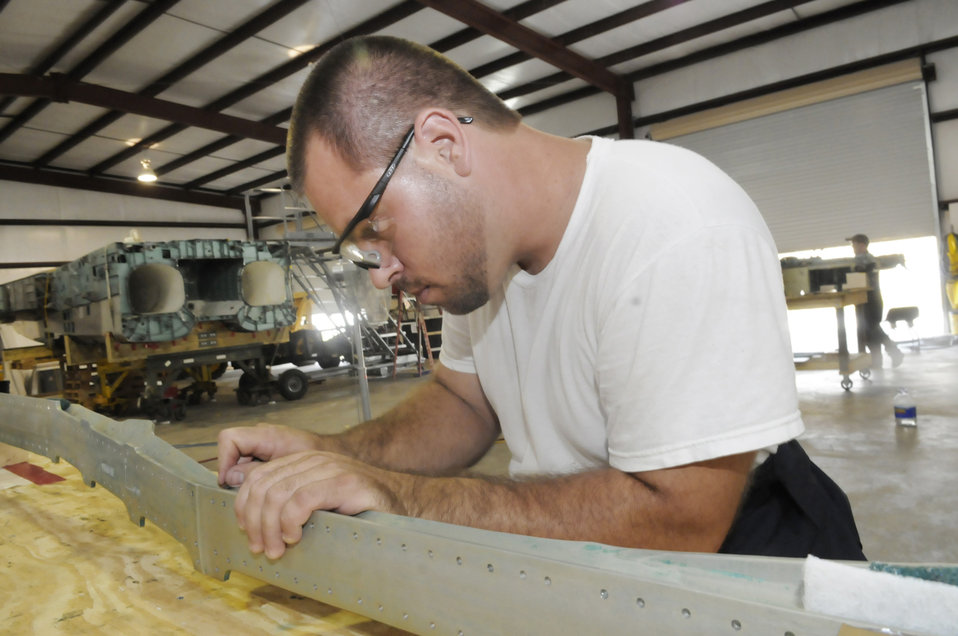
Examining an F-15 Eagle

Ben Rogers, with S&K Technologies in Byron, Ga., near Robins Air Force Base, Ga., strips paint and primer off an F-15 Eagle longeron so it can be sent off for analysis. Mr. Rogers is part of a crew that is disassembling an F-15 in an effort to provide maintenance crews more information about the aircraft.